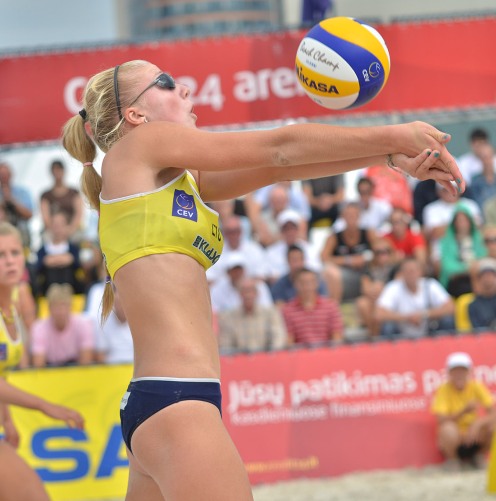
Lithuanian beach volleyball player Ieva Dumbauskaitė